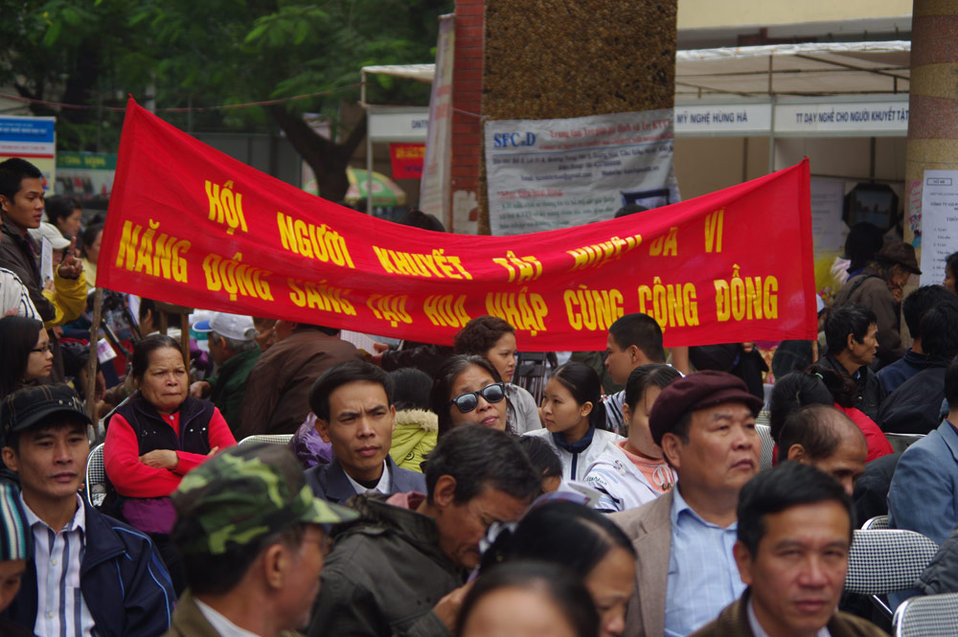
International Day of Persons with Disabilities 2010